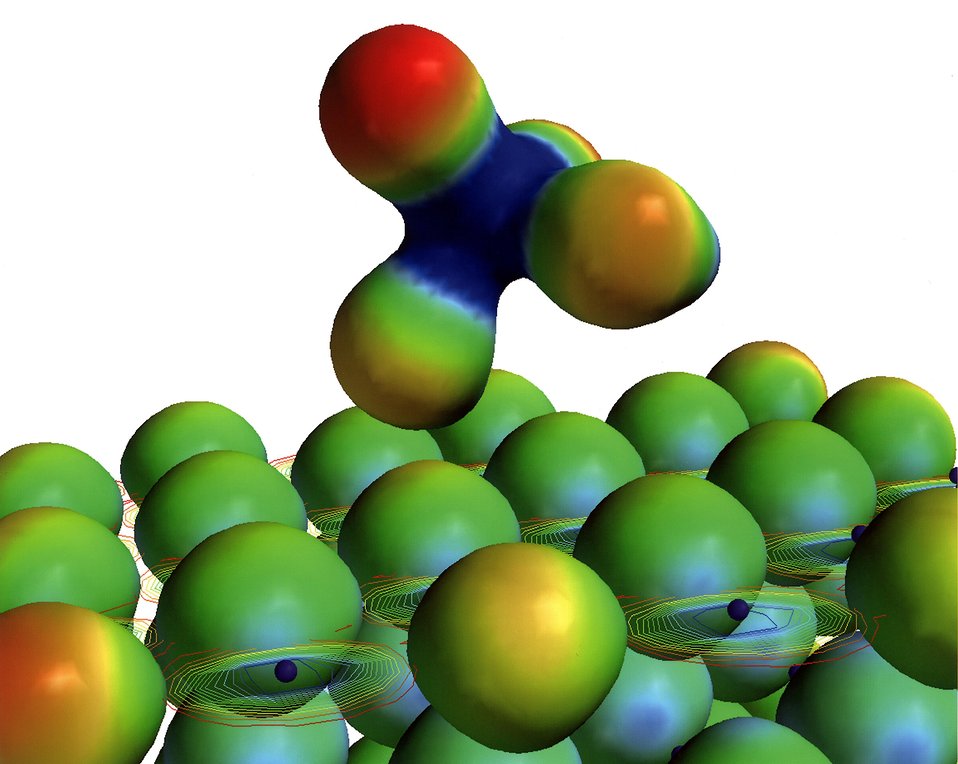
Computer image of an arsenate ion sorbing onto an oxide surface.

Sandia researchers developed arsenic trapping materials called specific anion nanoengineered sorbents (SANS). Ground water flowing through a column of the sans has its arsesnic content reduced to undetectable levels. The sans selectively attract dissolved anions such as arsenate (a toxic aresenic-containing compound) to positively charged sites on the sans surfaces and grab hold.